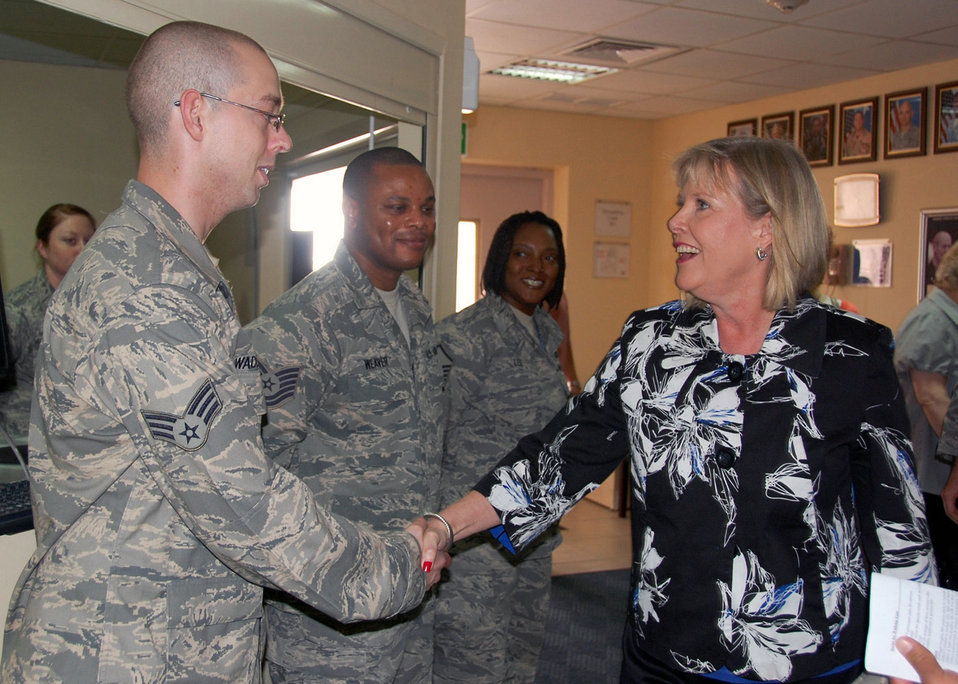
Top spouse discusses deployment family issues

Senior Airman Mitch Waddell, assigned to the 386th Expeditionary Force Support Squadron at an air base in Southwest Asia, welcomes Suzie Schwartz, wife of Air Force Chief of Staff Gen. Norton Schwartz, to the base gym April 7 during her visit to the 386th Air Expeditionary Wing with her husband.